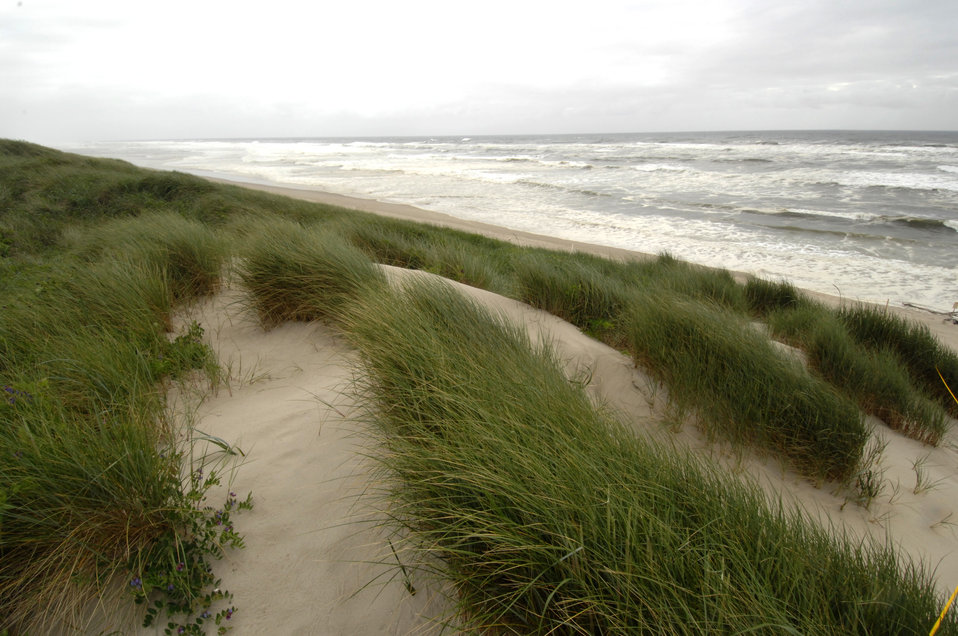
The Oregon Dunes at the National Recreation Area is located south of Florence, Oregon on June 10, 2008. The dunes lie along the coast, with the estuaries of three major river valleys connected by two long stretches of sand.